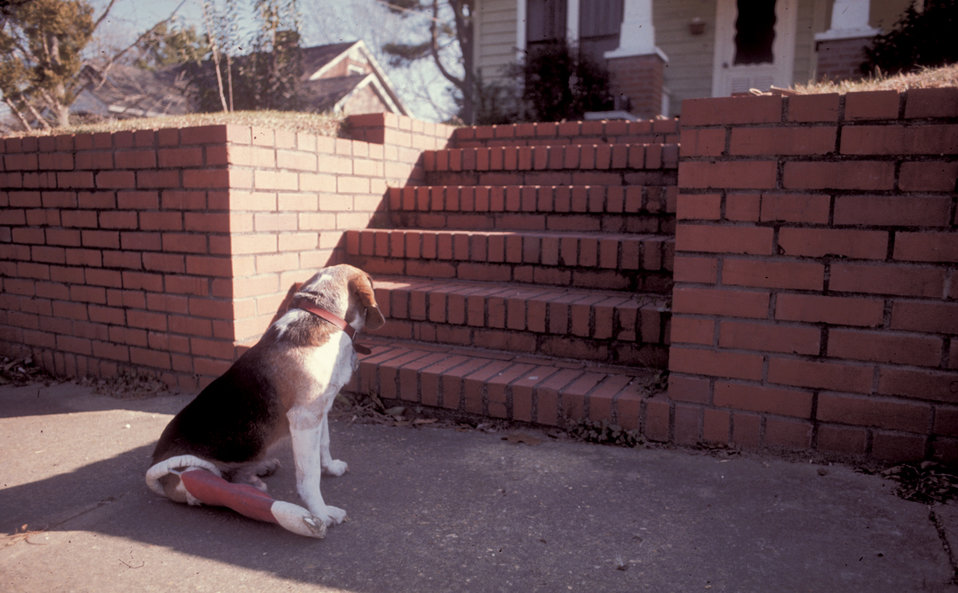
Seated at the bottom of an outdoor stairway, this 1978 image depicting a beagle with a broken right rear leg that had been set in a cast. This illustrated how diverse a user population need be taken into account when designing public walkways. Human beings of all types and in all states of mobility, as well as animals must be considered in order for a functional walkway to be considered "universal" in its usability and functionality. Note the lower steps in PHIL 9059, which the mobility-challenged beagle was able to engage with much less difficulty.